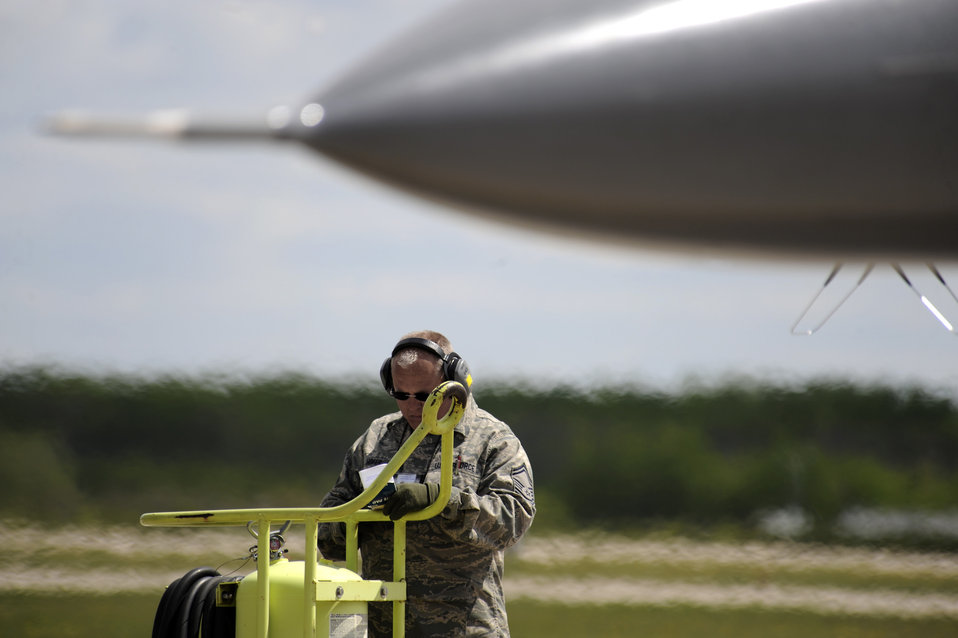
Maple Flag 42

Senior Master Sgt. Jeff Hofer, a flight chief assigned to the 114th Fighter Wing, Sioux Falls, S.D. Air National Guard, annotates the afternoon launch progress during exercise Maple Flag 42 at 4 Wing Cold Lake, Canada, June 4. Maple Flag is a Canadian-sponsored and Air Combat Command supported exercise that provides aircrews simulated air and ground combat training to coalition forces in a NATO environment.